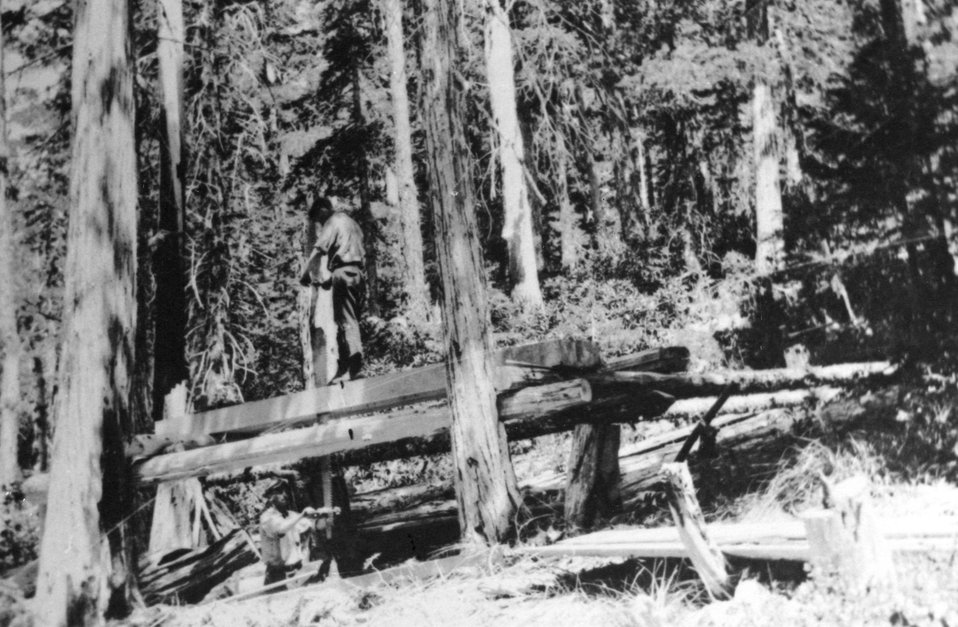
Whipsawing. Frank Thomson below and Leo Frye above.